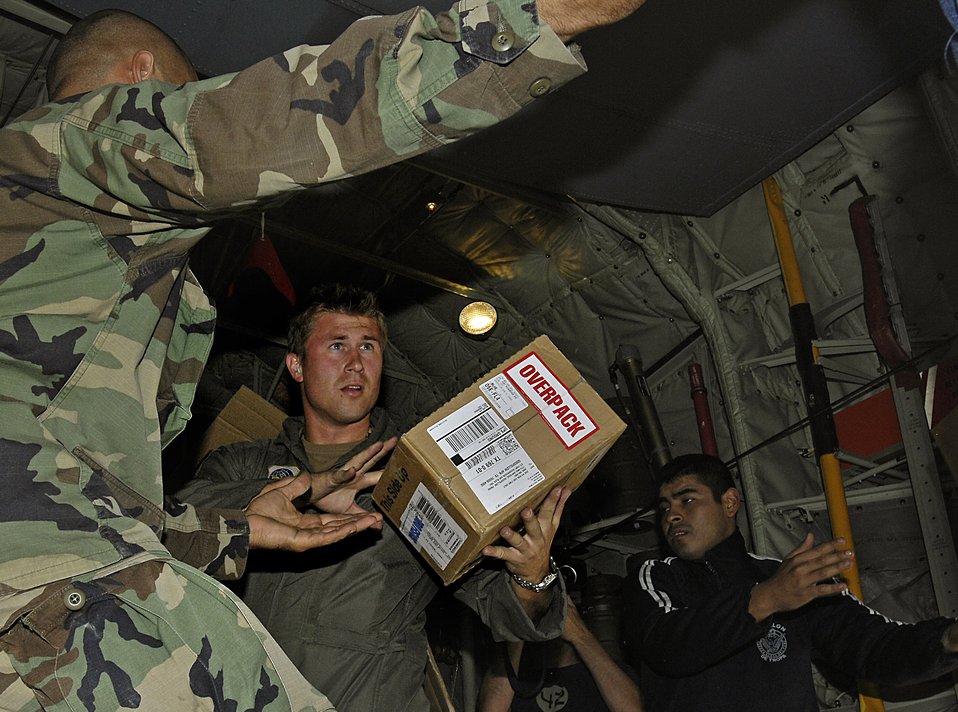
Peruvian support

Capt. Bart Robinson and Peruvian aid workers unload supplies from a C-130 Hercules Aug. 19 in Pisco, Peru. The supplies are for the victims of an 8.0 magnitude earthquake that hit parts of western Peru. Around 80,000 Peruvians have been affected by the earthquake, and 80 percent of the homes were destroyed in the city of Pisco. Captain Robinson is with the Maryland Air National Guard.